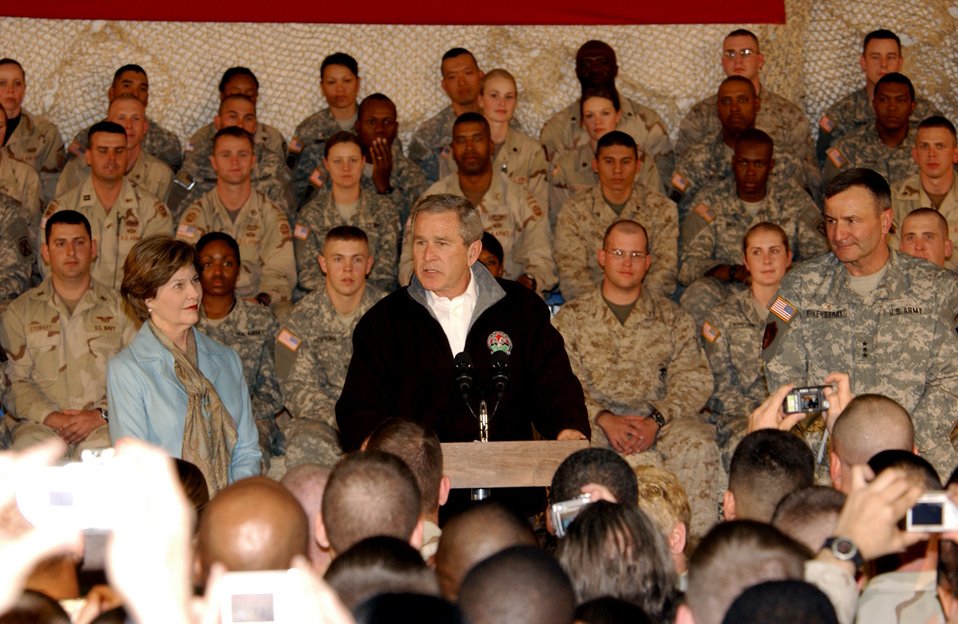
President pays surprise visit to troops in Afghanistan

President George W. Bush, the First Lady, Laura Bush, and Lt. Gen. Karl Eikenberry, Combined Forces Command - Afghanistan commander, pay a surprise visit to troops here March 1.